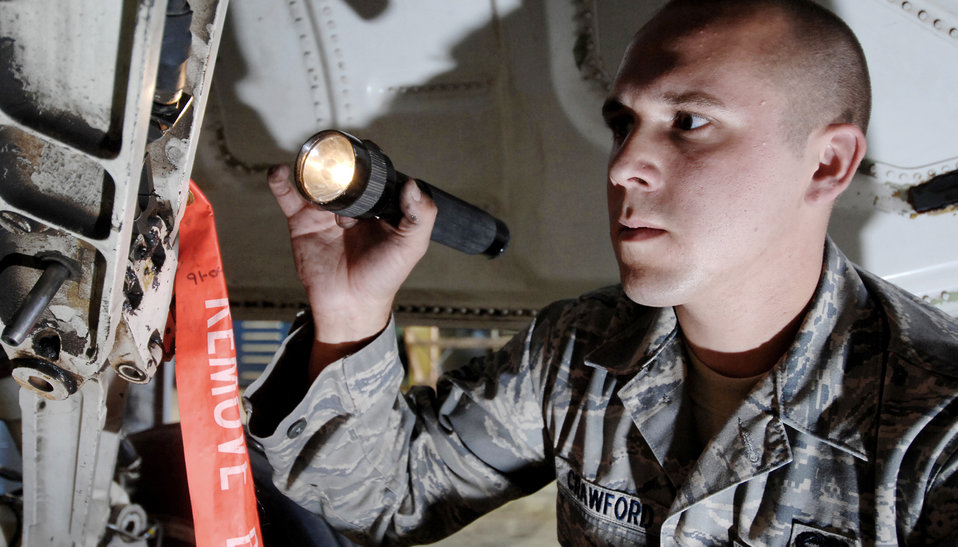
Balad maintainers keep F-16s flying

Airman 1st Class Kyle Crawford, 332nd Expeditionary Maintenance Squadron electronics and environmental systems specialist, inspects the down lock switch assembly for an F-16 Fighting Falcon Oct. 20, 2009 at Joint Base Balad, Iraq.